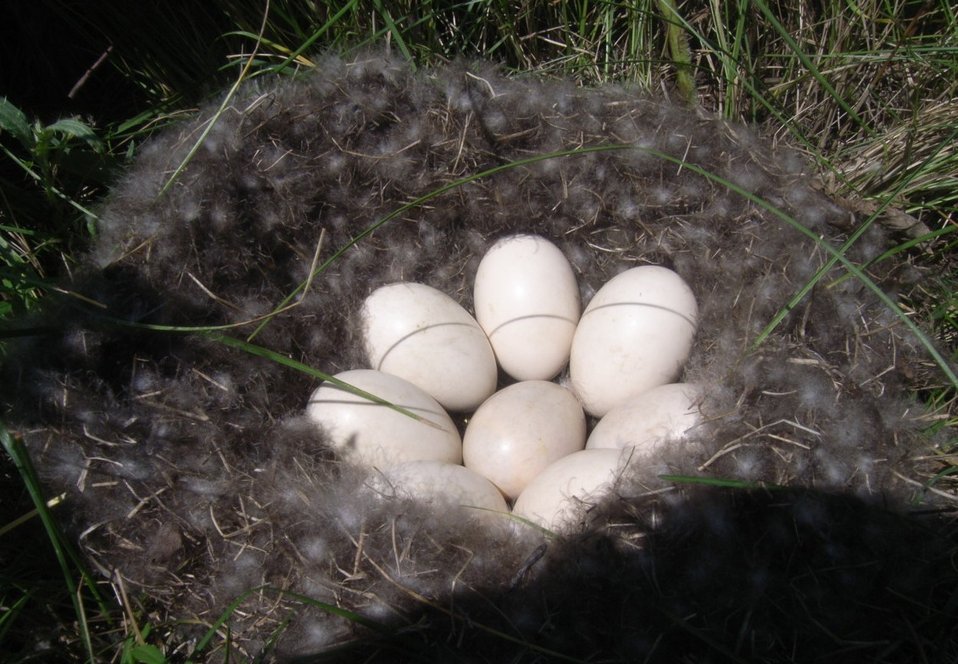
Gadwall Nest

This Gadwall nest was found on Winberg Waterfowl Production Area (WPA). Gadwall line the sides of their nest with feathers.